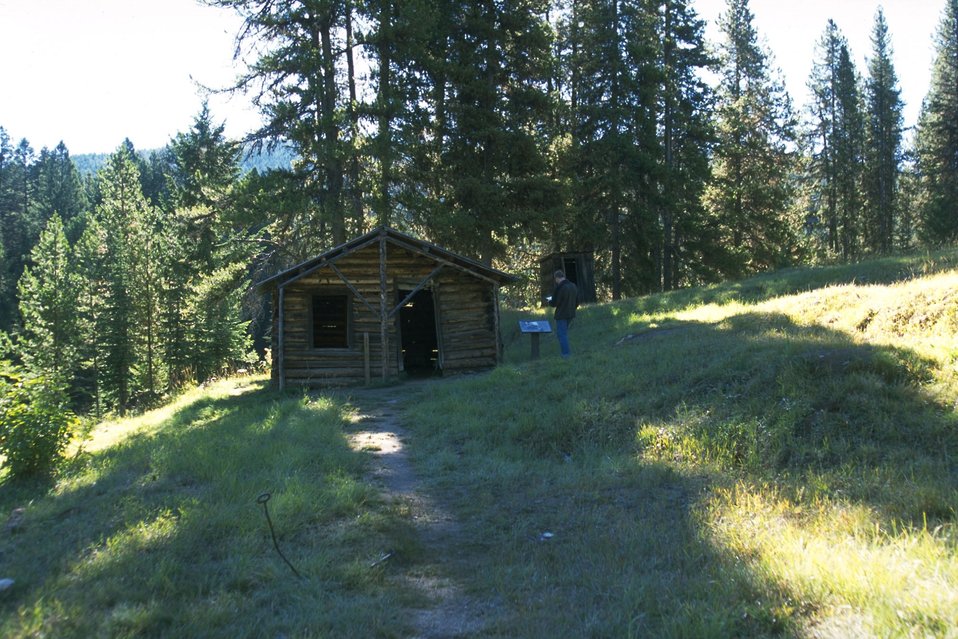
Garnet Ghost Town--""honeymoon"" cabin